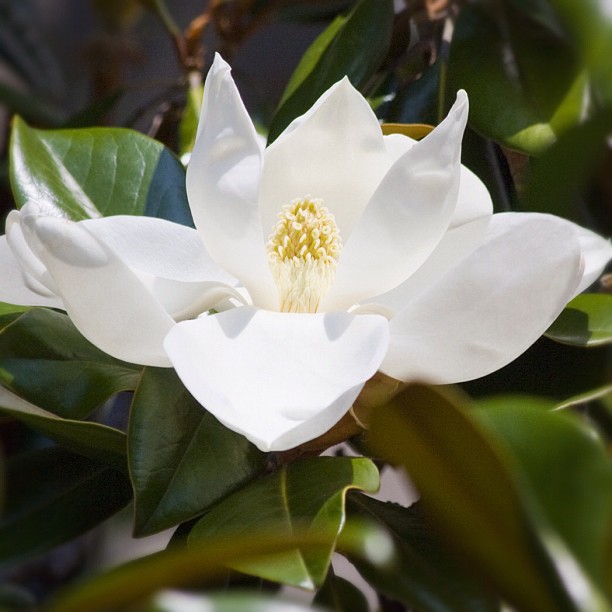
Beauty at the Ford House Office Building; magnolia in bloom.